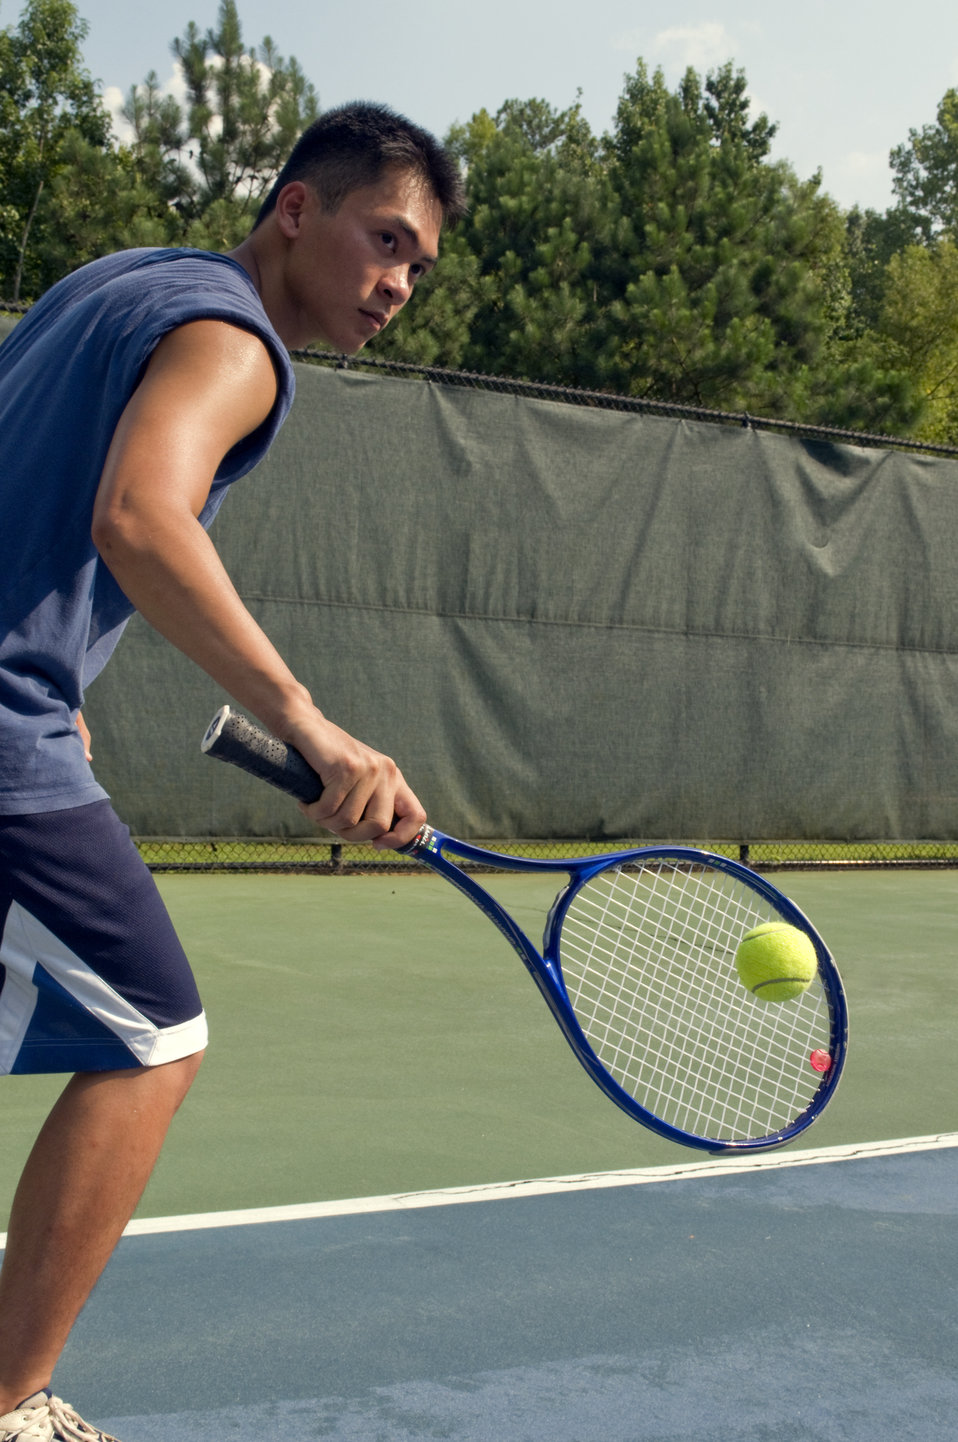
Caught in a mid-backhand swing, this young man was playing a game of tennis on the court. Wearing a darkly-colored tank top, loose-fitting shorts, and a protective layer of sunscreen, all helped block ultraviolet rays from damaging his sun-exposed skin. He'd also packed, or had access to some drinking water, which would keep him hydrated in the heat.